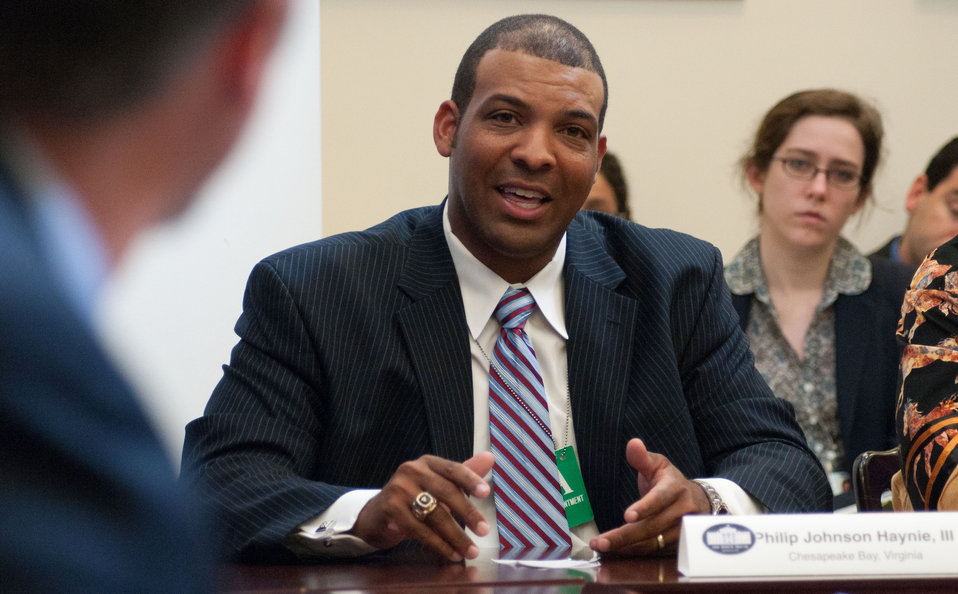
Philip Johnson Haynie, III (right), Haynie Farms, Chesapeake Bay, VA, attended a meeting at the White House, in Washington, DC, on July 6, 2011. He was asked to participate along with President Barack Obama, Agriculture Secretary Tom Vilsack, the President's Domestic Policy Adviser Melody Barnes and rural communities leaders from across the country for the White House Rural Champions of Change event to strengthen rural communities and promote economic growth. P.J. Haynie serves on USDA's Plant Variety Protection Act Board and on the Agricultural Advisory Council for Virginia's first congressional district. He is a graduate of Virginia Tech University and currently serves on the College of Agriculture and Life Sciences Advisory Committee for both Virginia Tech and Virginia State Universities. Locally, he is a Board member of Chesapeake Academy and a member of Macedonia Baptist Church. He is employed by Haynie Farms, a diverse row-crop farm in the Chesapeake Bay region of VA, where he farms more than 3,000 acres of primarily corn, wheat, and soybeans. P.J. is also a member of the National Black Growers Council, a coalition of African American commodity growers who advocate for the 21st century policy needs of Black growers and the future of Black growers.